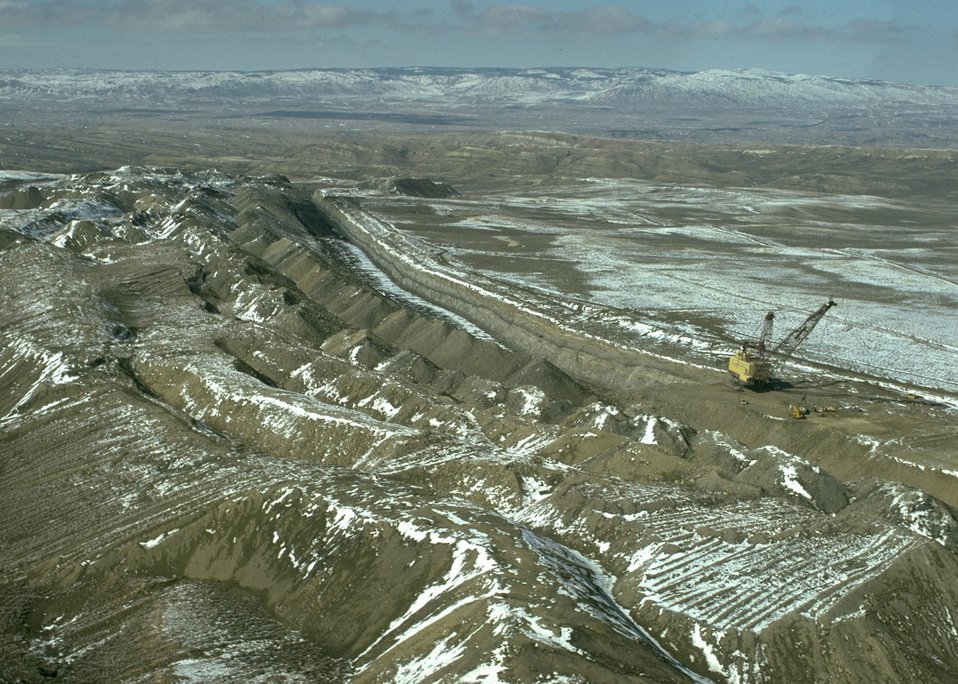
Coal bed methane development.